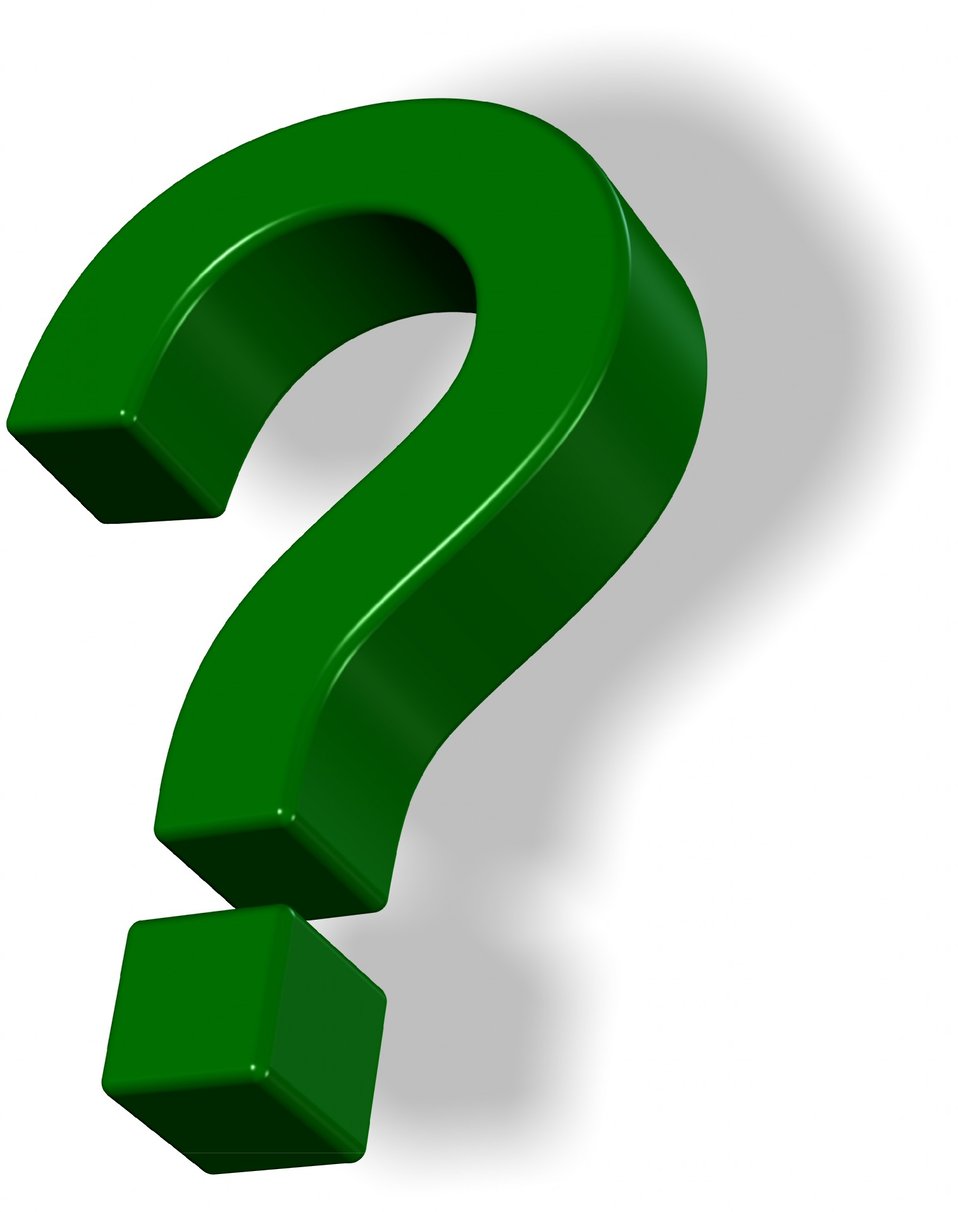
Green question mark 2

Green question mark in 3d.